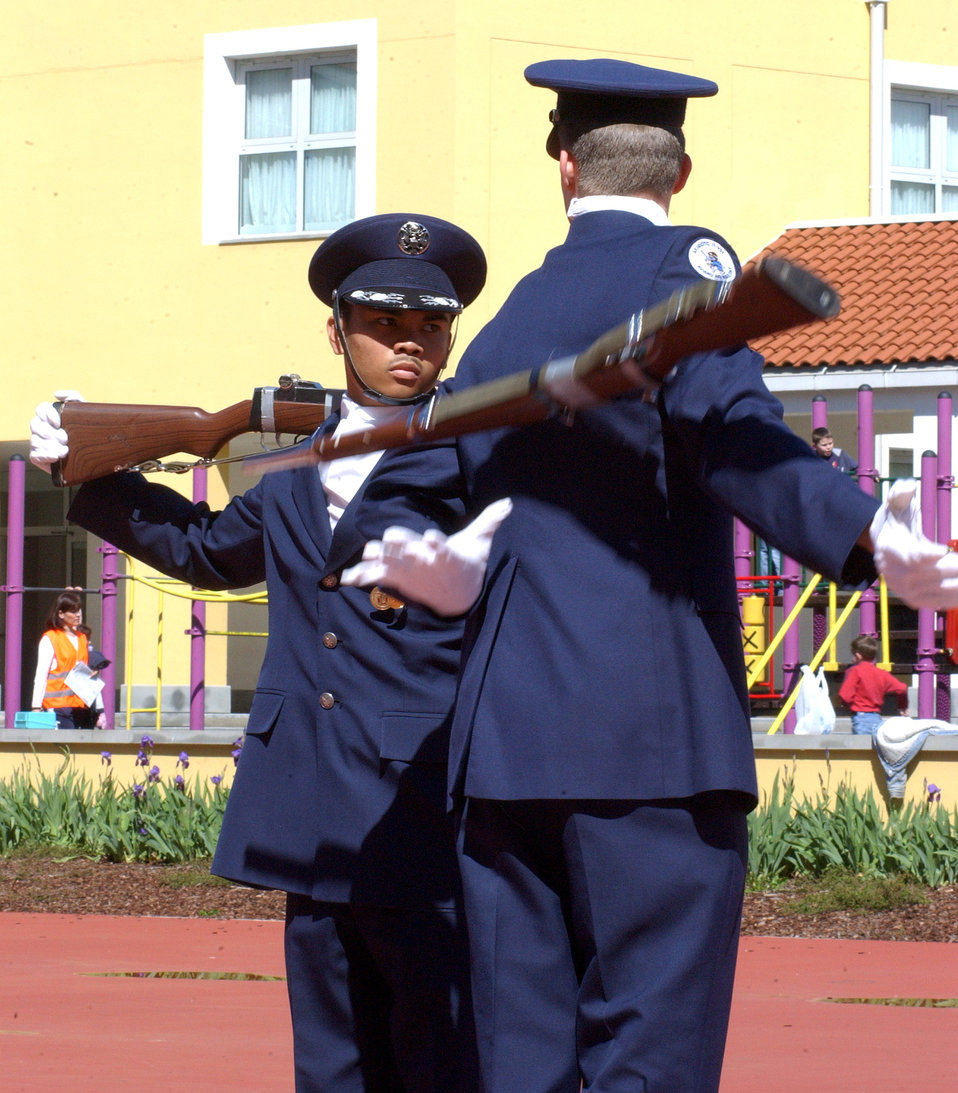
Little brothers in blue

AVIANO AIR BASE, Italy -- Junior ROTC cadets Capts. Francis Carino, left, and Sebastian Berisford participate in the duo armed exhibition routine during a week long competition at Aviano High School here April 26.